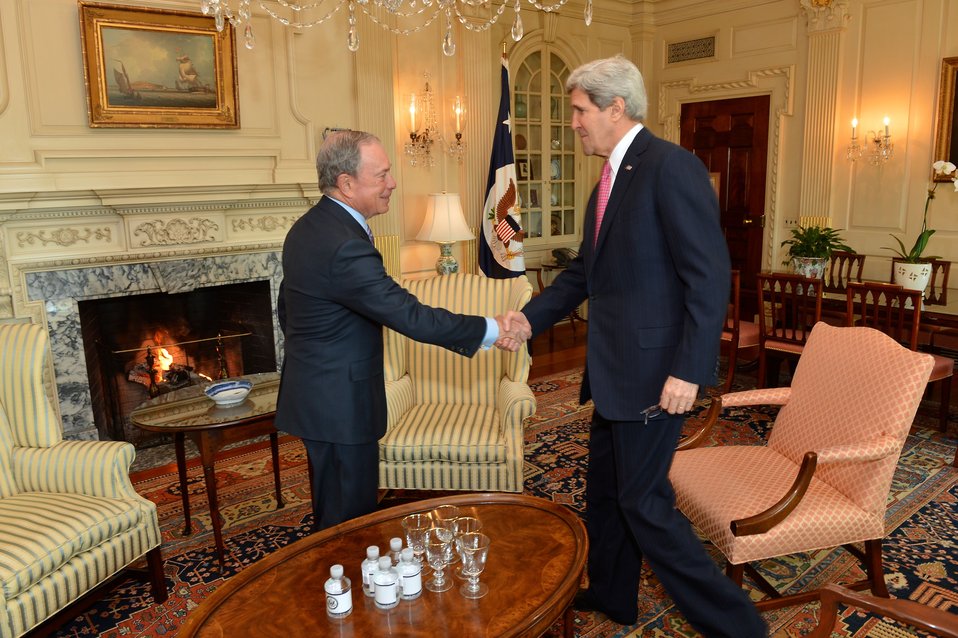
Secretary Kerry Meets With UN Special Envoy Michael Bloomberg

U.S. Secretary of State John Kerry Kerry meets with UN Special Envoy for Cities and Climate Change Michael Bloomberg at the U.S. Department of State in Washington, D.C., on February 27, 2014.